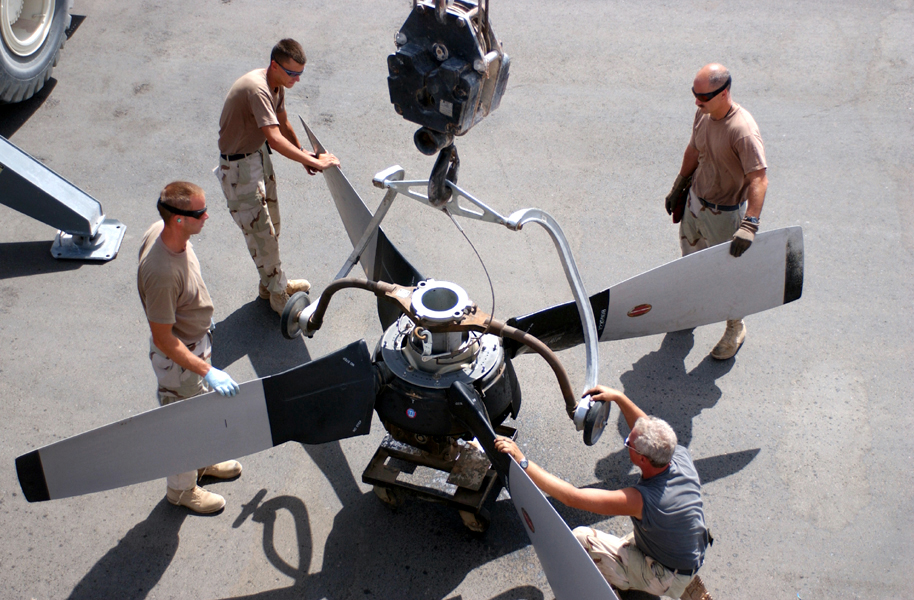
Propeller check

OPERATION IRAQI FREEDOM -- Propulsion shop airmen guide the propeller assembly onto a mounted wheel base for inspection during routine maintenance on a C-130 Hercules. The airmen are from the Missouri Air National Guard's 139th Airlift Wing supporting Operation Iraqi Freedom from a forward-deployed location in Southwest Asia.